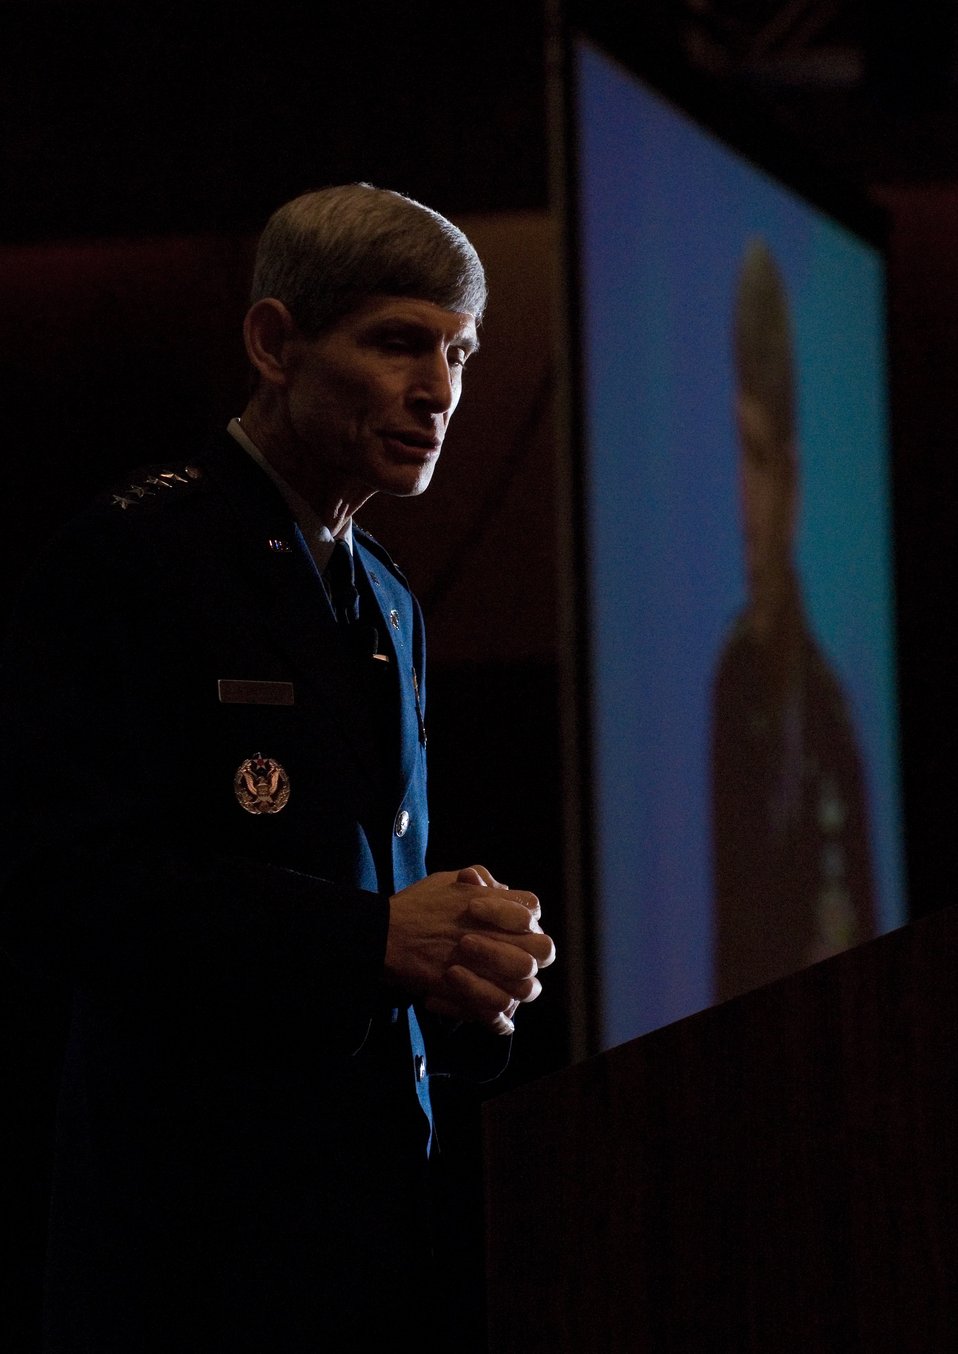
Air Force chief of staff discusses leadership goals

During his keynote speech at the Air Force Sergeants Association's annual Professional Airmen's Conference and International Convention in San Antonio on Aug. 25, Gen. Norton Schwartz, Air Force chief of staff, discussed the importance of noncommissioned officer leadership and goals and objectives to remedy problems in today's Air Force.